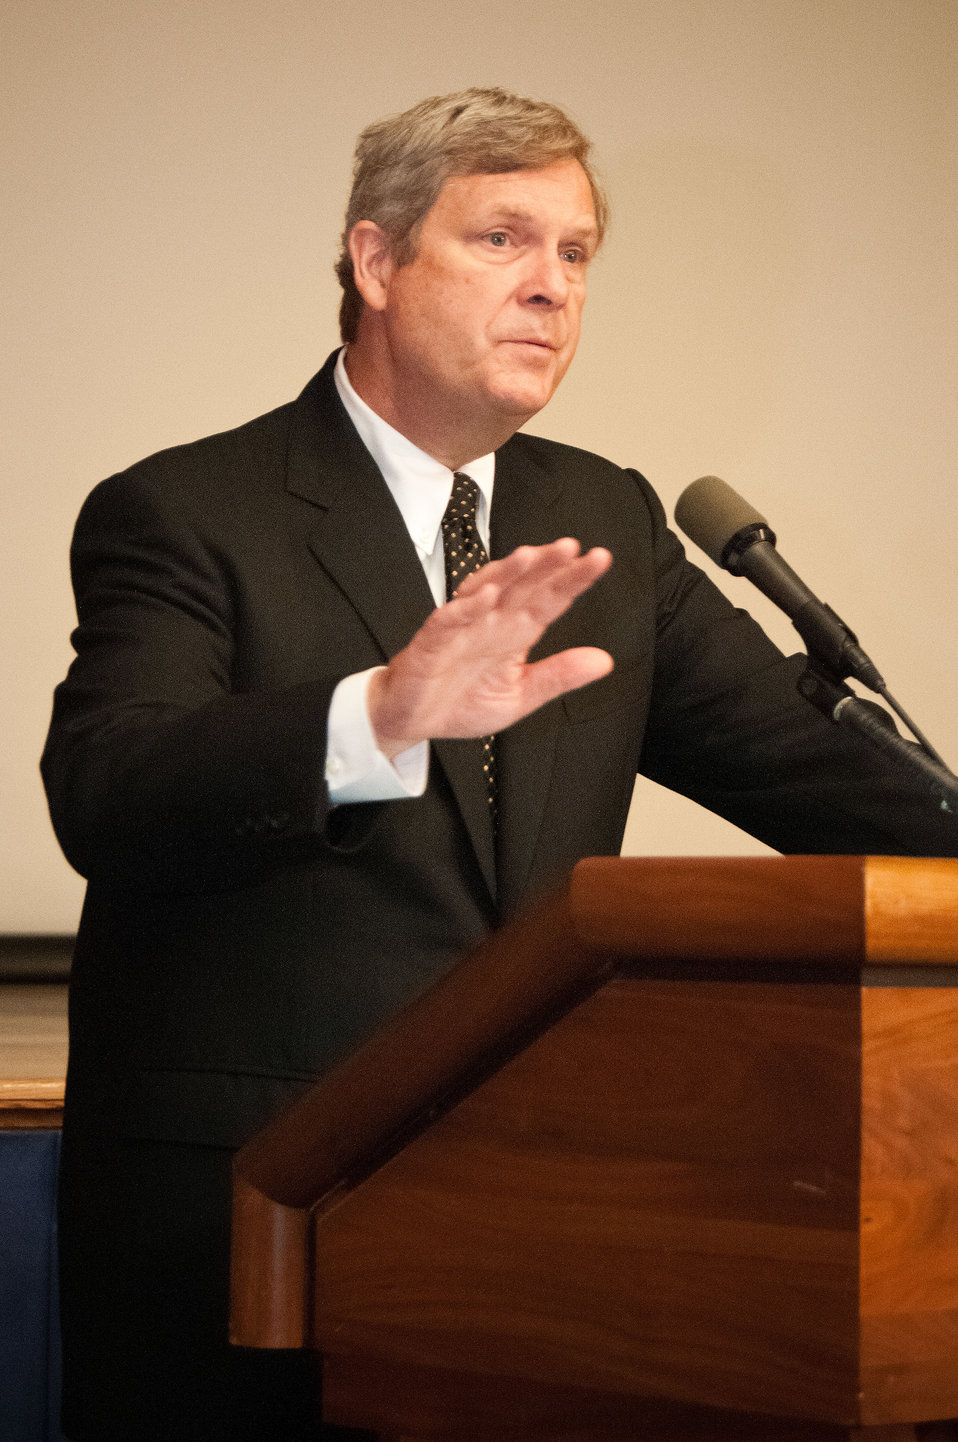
Agriculture Secretary Tom Vilsack addressed the National Farmers Union at the U.S. Department of Agriculture (USDA) in Washington, D.C. on Monday, Sept. 10, 2012. Secretary Vilsack discussed the economics of agriculture, conservation, exports, Rural America and the 2012 Farm Bill.